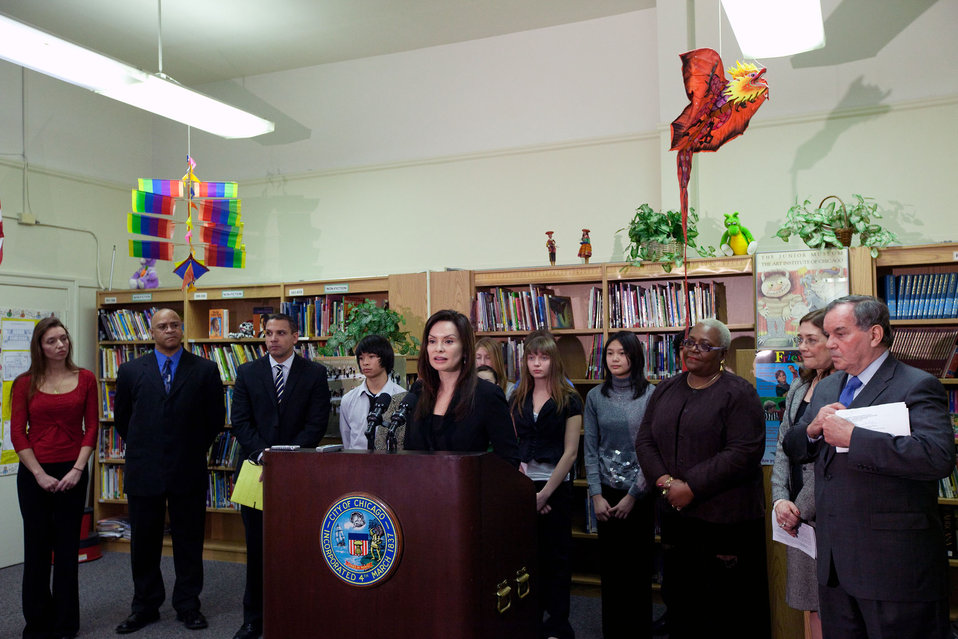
Rios in Chicago: 1/6/10

Treasurer Rios spoke at a Chicago Public School to highlight the local impact of the American Recovery and Reinvestment Act on January 6, 2010.